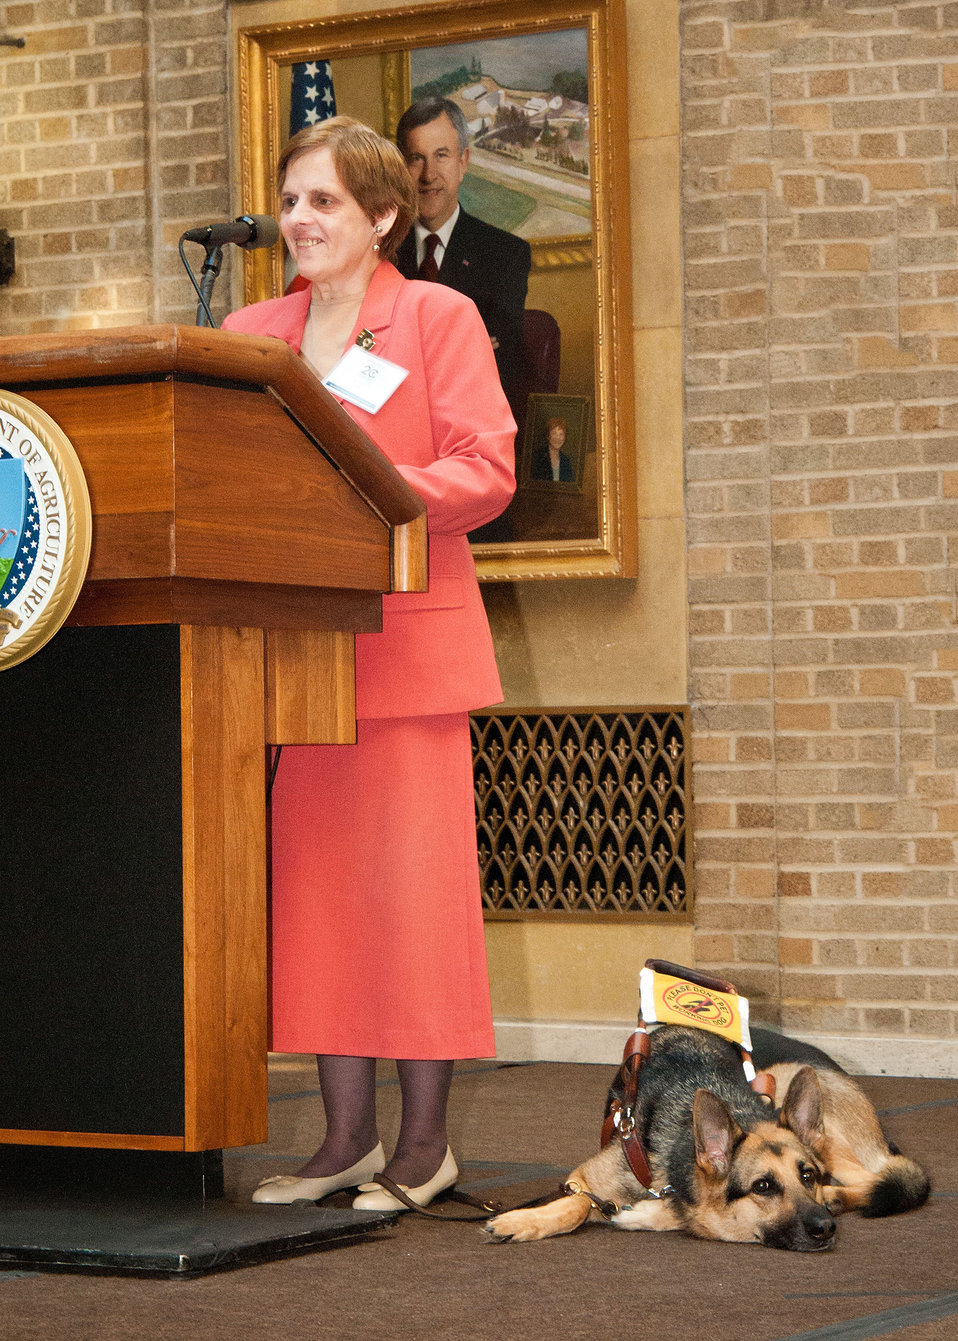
U.S. Department of Agriculture (USDA) Natural Resources Conservation Service Legislative Affairs Division Legislative Affairs Specialist Denise Decker’s guide dog “Wander” waits patiently while Decker addresses employees and guests at USDA’s Departmental Management (DM) Target Center 20th Anniversary at USDA in Washington, D.C. on Thursday, Sept. 13, 2012. The USDA Target Center has provides Assistive Technology to employees with disabilities. The Center has assisted thousands of individuals with disabilities to further contribute to the mission of USDA. The Target Center has also partnered with the Department of Defense Computer/Electronic Accommodations Program (CAP).